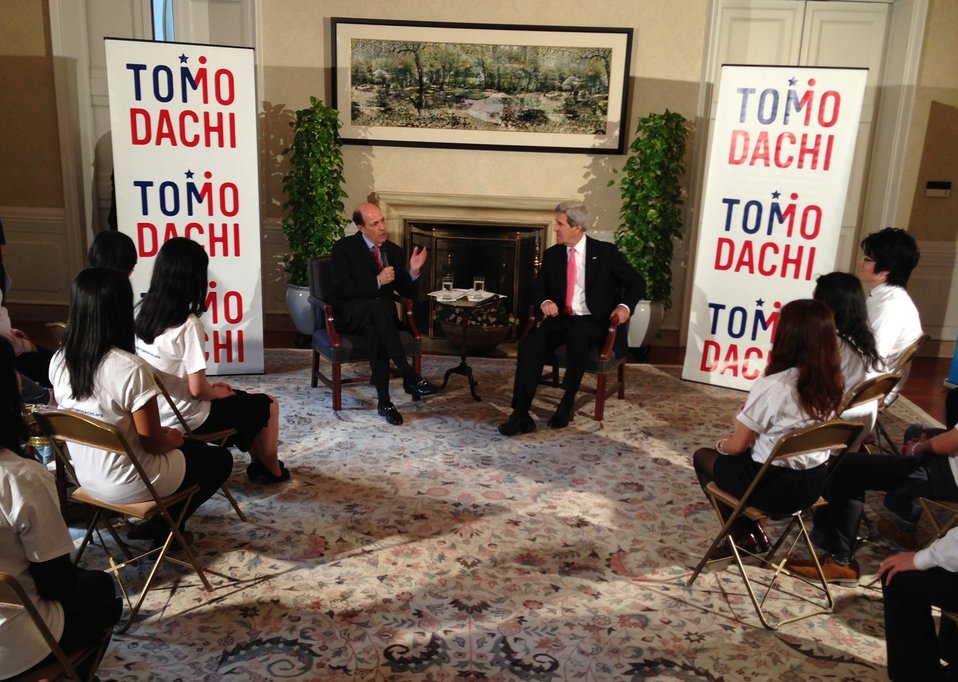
Ambassador Roos Introduces Secretary Kerry to Audience of Japanese Youth

The U.S. Ambassador to Japan, John Roos, introduces U.S. Secretary of State John Kerry to members of the TOMODACHI Initiative youth engagement program before their discussion in Tokyo, Japan, on April 14, 2013.